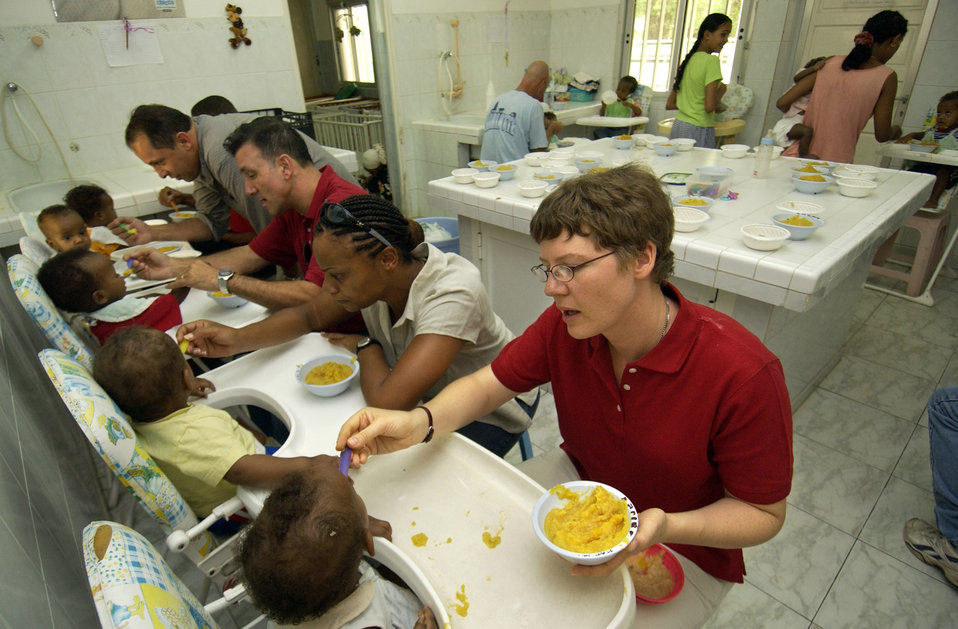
Helping hand

AFRICA -- Staff Sgt. Kate Robinson sits alongside other U.S. military volunteers while feeding a toddler during a visit to an orphanage here. The volunteers help feed, change, bathe and clothe the infants. Sergeant Robinson is assigned to the 4th Combat Camera Squadron at March Air Reserve Base, Calif.